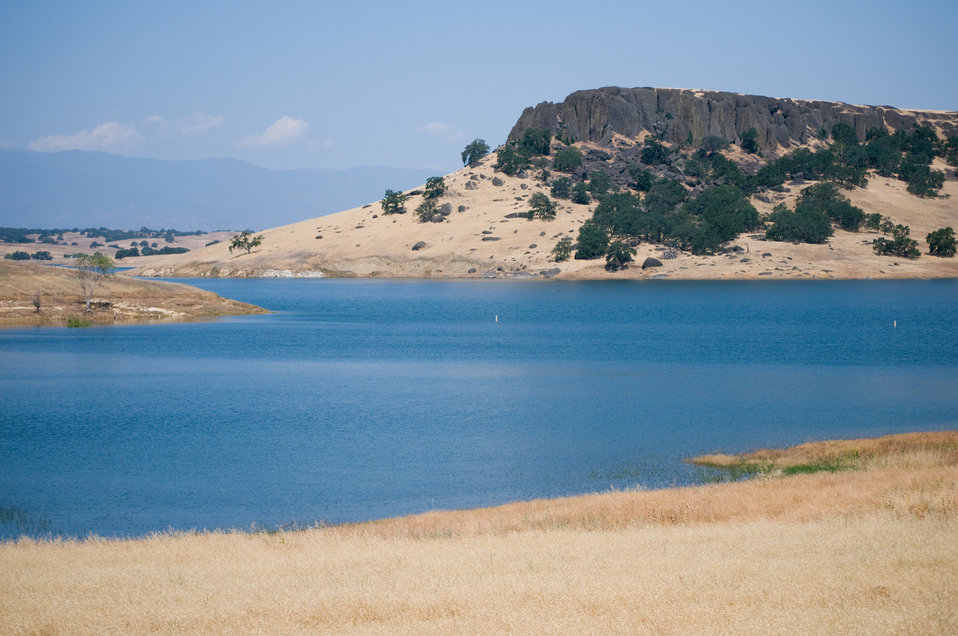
Black Butte Lake

Black Butte Dam, shown here May 28, 2009, is located near Orland, Calif., in Tehama and Glenn counties. Completed by the U.S. Army Corps of Engineers Sacramento District in 1963, the dam impounds Stony Creek, creating Black Butte Lake. When full, the lake has a surface area of 4,460 acres, is seven miles long and boasts a shoreline of 40 miles. The dam reduces flood risk for nearby towns and agricultural lands. Black Butte Lake and Dam are managed by the Sacramento District.